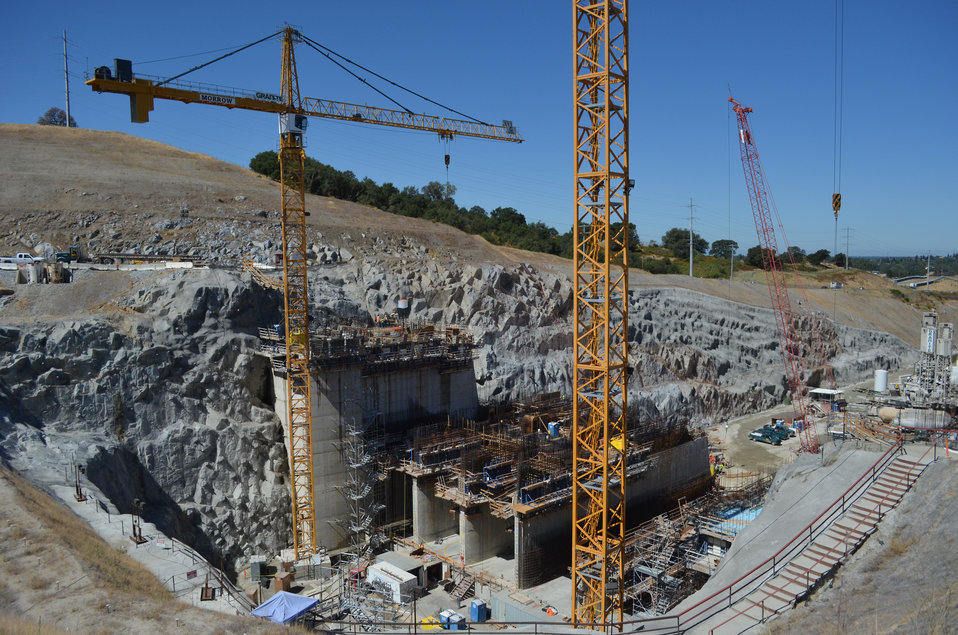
Construction continues on the control structure of Folsom Dam’s new auxiliary spillway June 19, 2013, in Folsom, Calif. The control structure, essentially a second dam, will work with the main dam to release water from the reservoir during large storms.